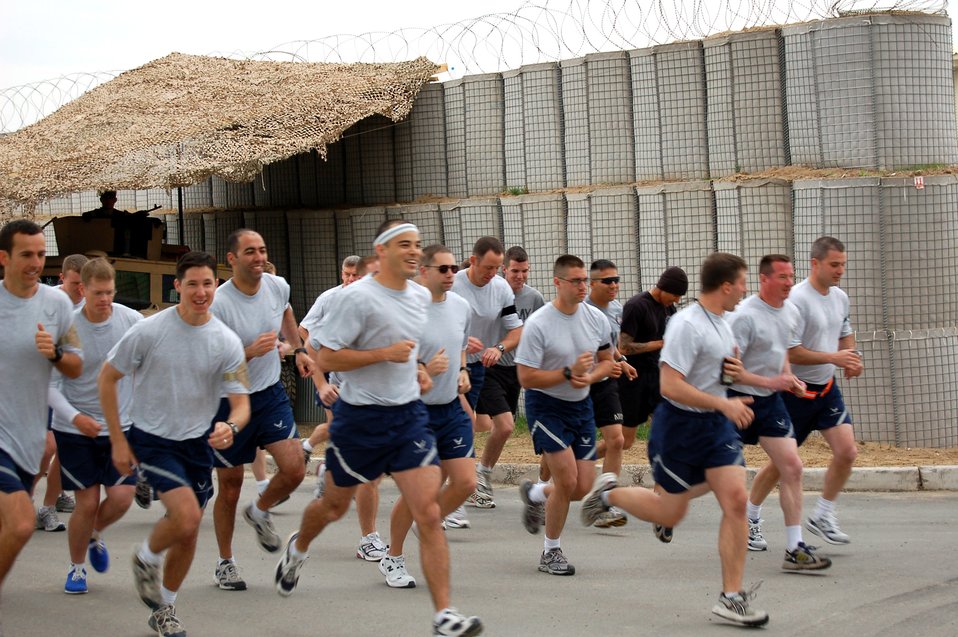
A world away, Airmen enjoy hometown tradition

Runners take off on the Bloomsday Away 12K race at Manas Air Base, Kyrgyzstan, on Sunday, May 7, 2006. The Bloomsday race is annual tradition in Spokane, Wash. This year, Airmen brought their own version of the race to Manas.